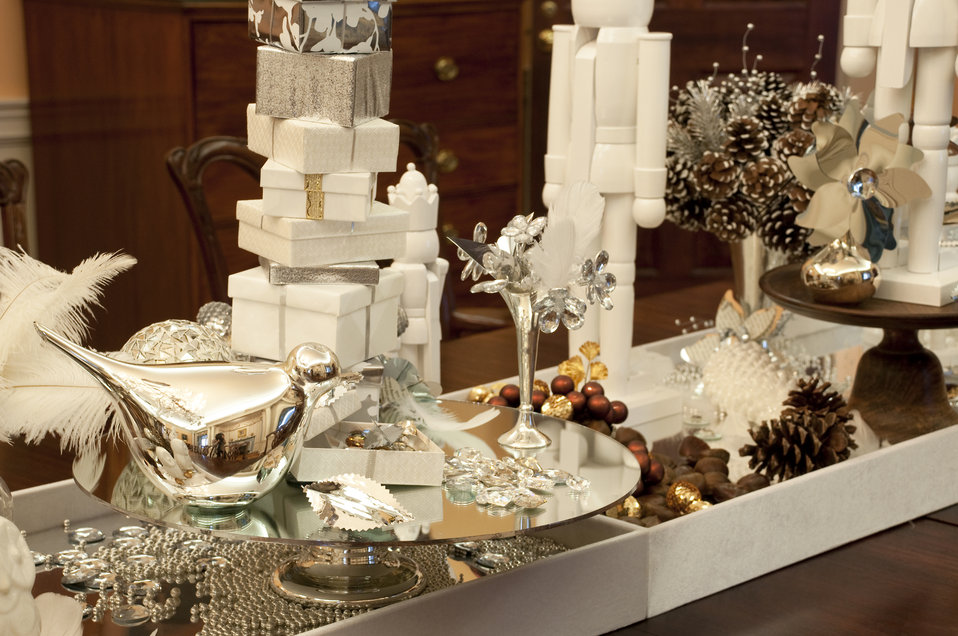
The U.S. Department of State Partners With Time Inc. and InStyle To Decorate the James Monroe Reception Room

The U.S. Department of State partners with Time Inc. and InStyle to decorate the Diplomatic Reception Rooms for the Holidays in December 2010. Pictured in this photo is the James Monroe Reception Room.